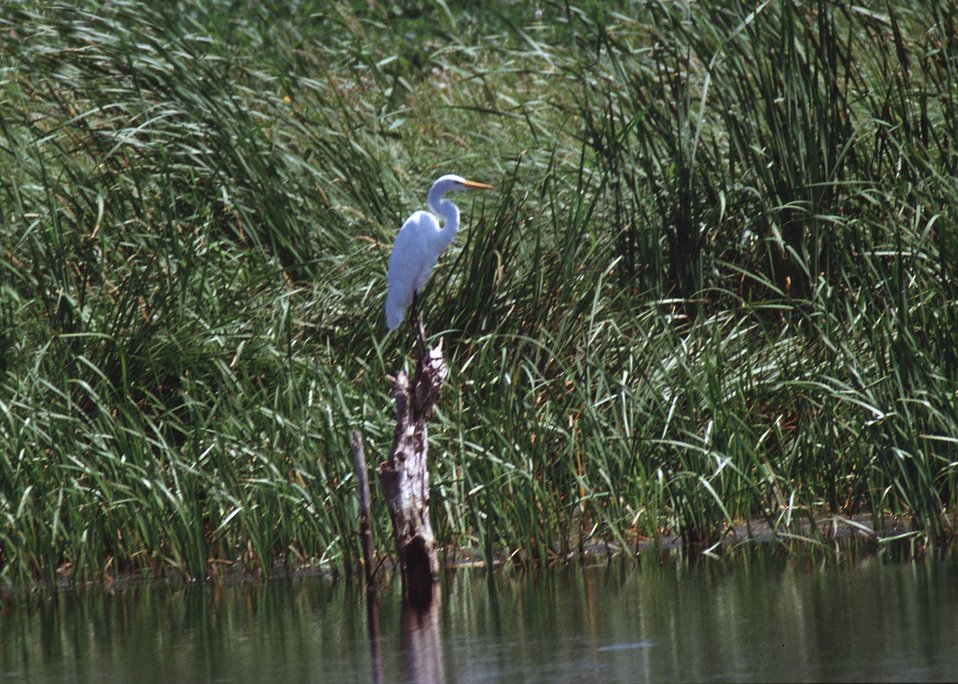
Egret in a pothole wetland.